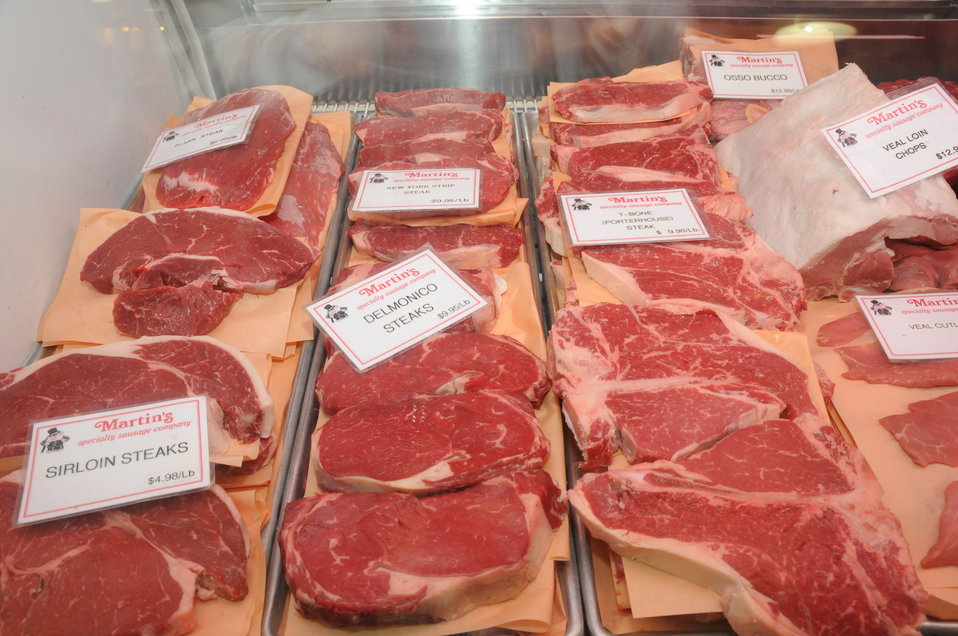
The Reading Terminal Market offers produce fresh from the field to the people of Philadelphia, PA on April 3, 2009. There are Amish specialties, fruits, vegetables, meats, seafood, and poultry. Reading Terminal Market opened for business in 1892 with approximately 78,000 square feet and almost 800 spaces for vendors. The Market was revitalized in the 1990’s and today is still the gastronomic bazaar that its original planners had envisioned. Many of the historic Market stands survived the reconstruction and are once again filled with local produce, fresh eggs, milk, meats, poultry, seafood, handmade crafts, jewelry, and clothing. The Market is home to more than 80 merchants, two of whom are descendants of the original stand holders from a century before.